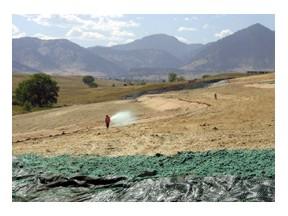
Rocky Flats landfill seeding

Seeding the original landfill at the Rocky Flats Environmental Technology Site near Golden, CO. The cleanup was completed in 2006.